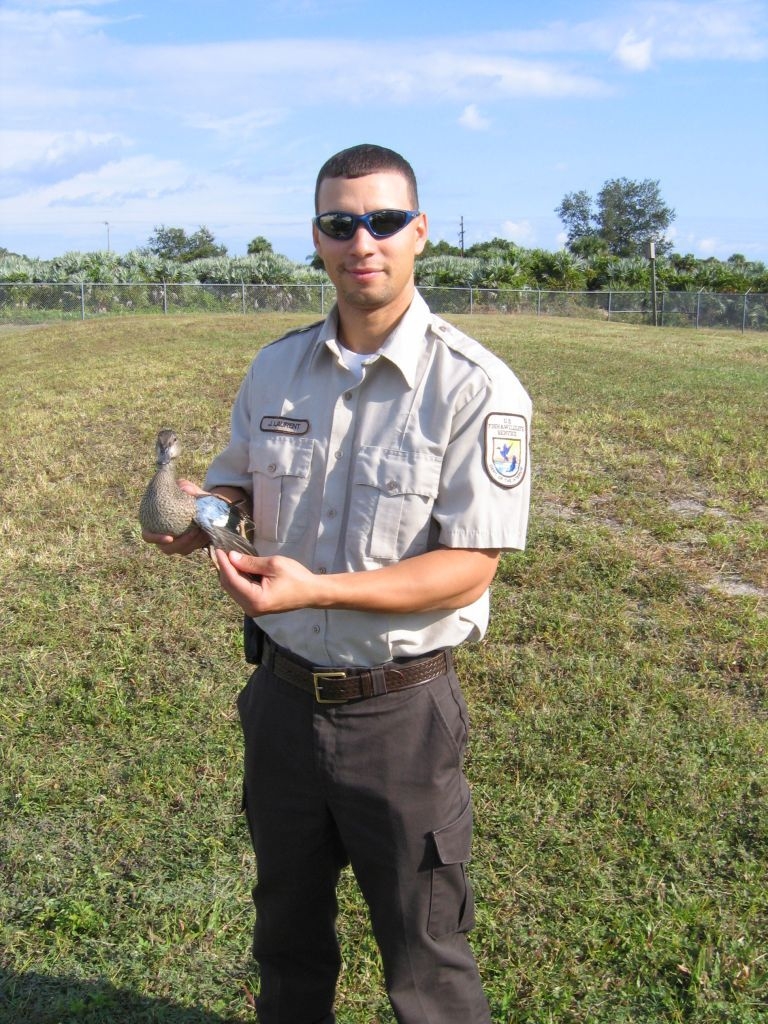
Jimmy Laurent

At Merritt Island National Wildlife Refuge in Florida, where he was assistant refuge manager until 2008, Jimmy Laurent displays a blue-winged teal he’s about to band. Today, Laurent is refuge manager at Anahauc National Wildlife Refuge in Texas. (USFWS)